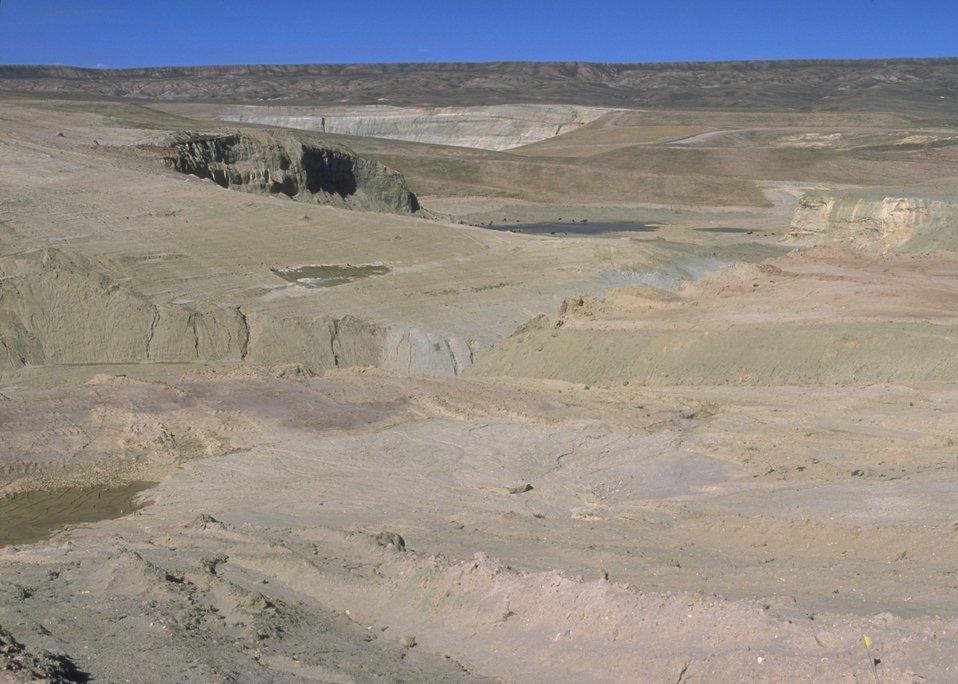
Gas Hill Abandoned Mine Lands in various stages of rehabilitation, Lander Field Office.